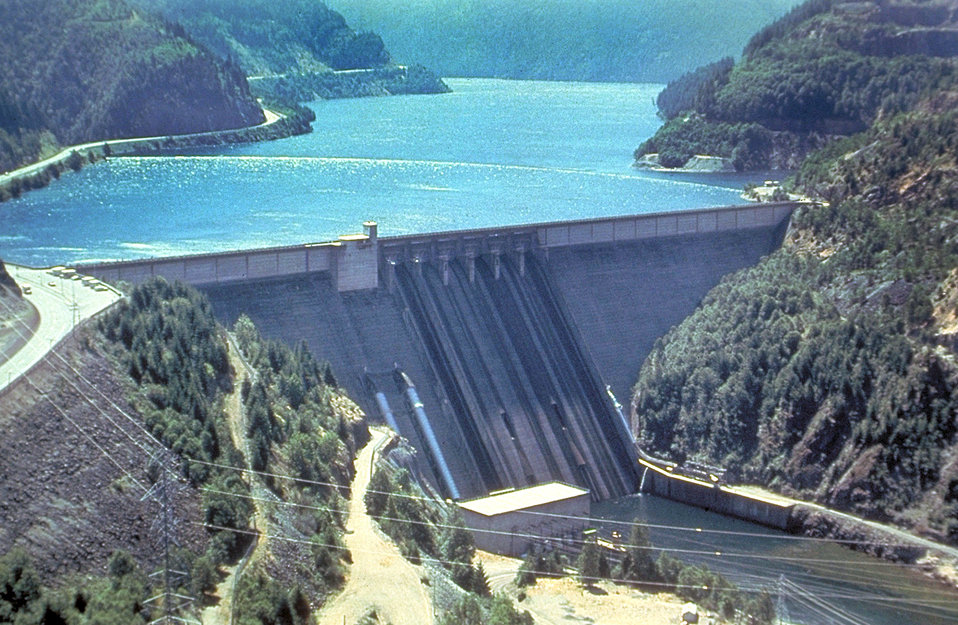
Detroit Dam in North Santiam River, Oregon.